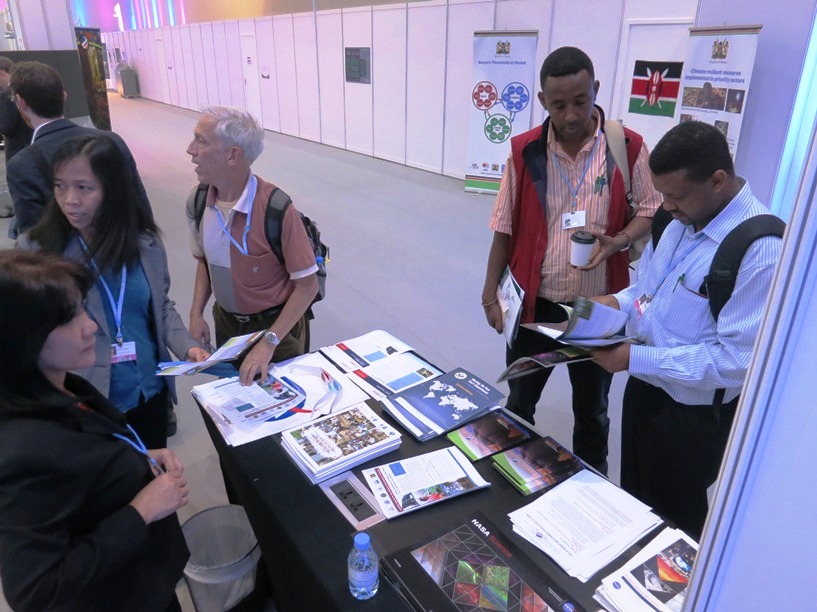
COP-18 Delegates View NASA Publications

Delegates from 18th Session of the Conference of the Parties to the UN Framework Convention on Climate Change (COP-18) view NASA publications at the U.S. Center in Doha, Qatar, November 29, 2012.